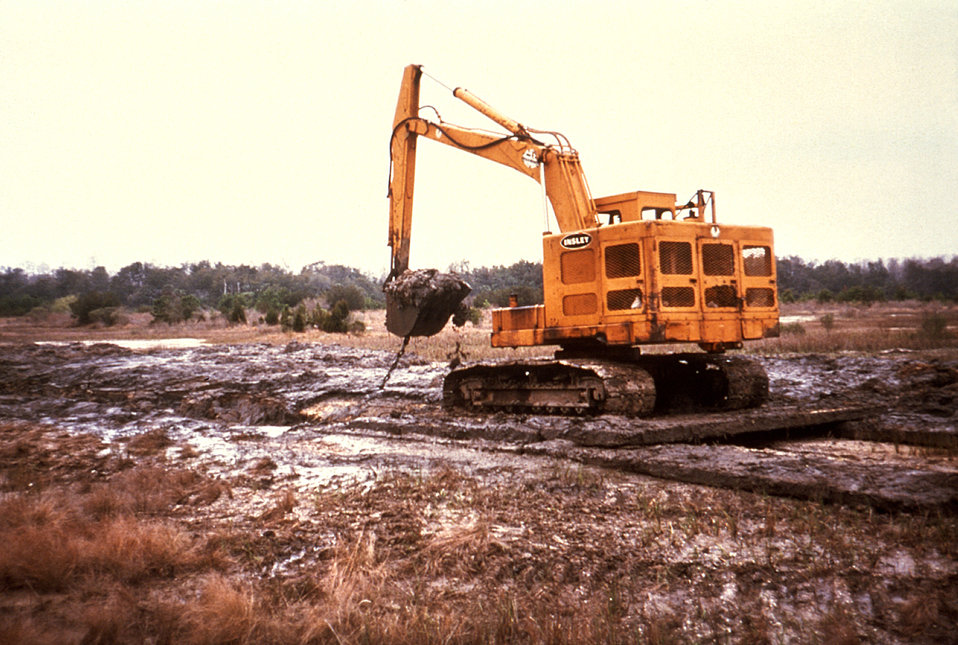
This hydraulically powered bucket shovel was in the process of removing debris from a drain opening, thereby, restoring a free flow of water that was collecting in the region.